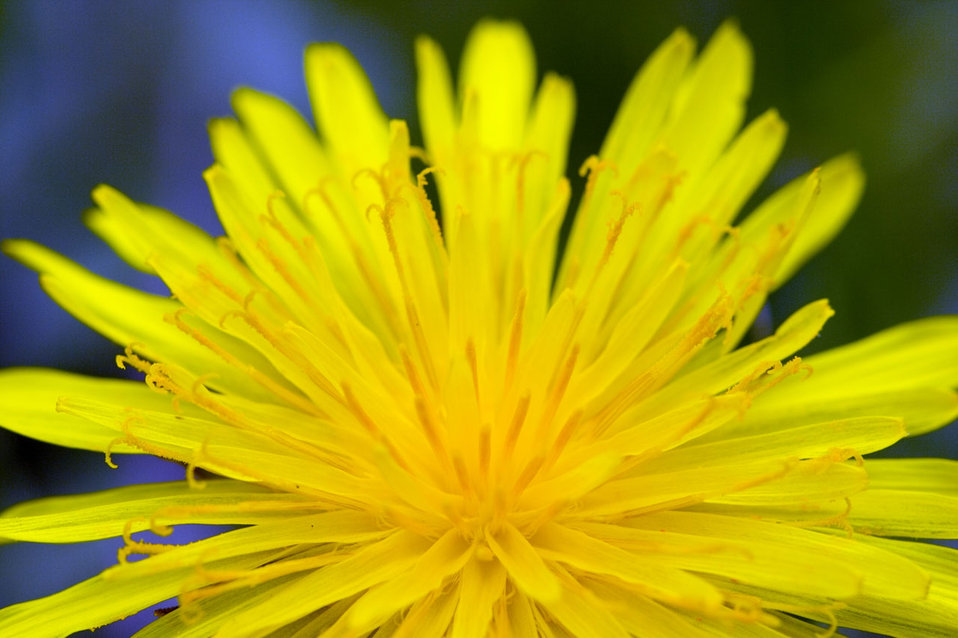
Dandelion

Macro photo of dandelion in blossom.